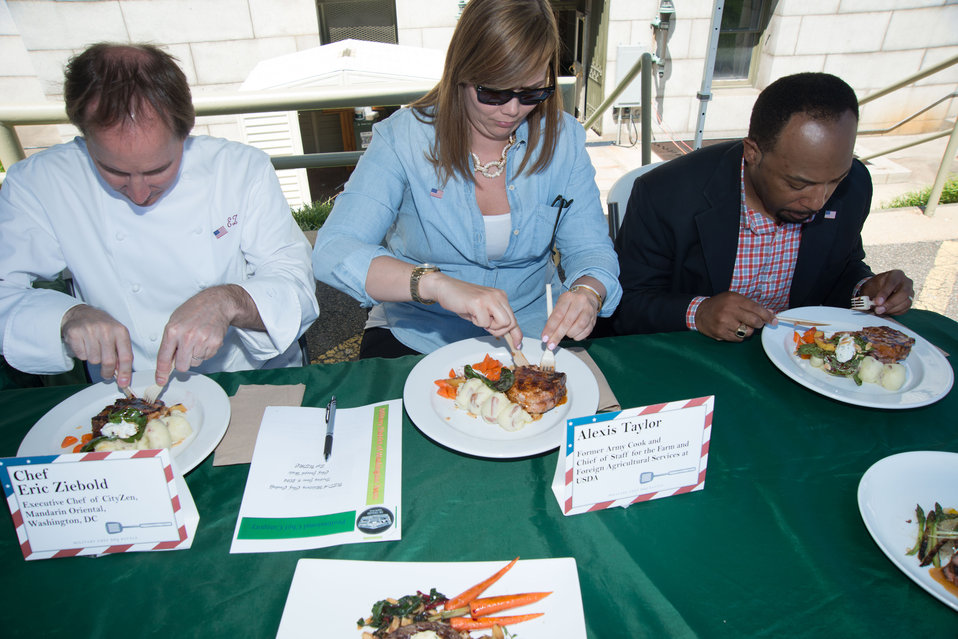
(L to R) Celebrity judge Chef Eric Ziebold, U.S. Department of Agriculture (USDA) Foreign Agricultural Service (FAS) employee and former Army cook Alexis Taylor, and USDA Agricultural Marketing Service (AMS) Transportation and Marketing Program Deputy Administrator Arthur Neal taste the meals prepared by the military chefs to determine a winner at the opening of USDA’s Farmers Market in the east parking lot of USDA in Washington, D.C. on Friday, Jun. 6, 2014.